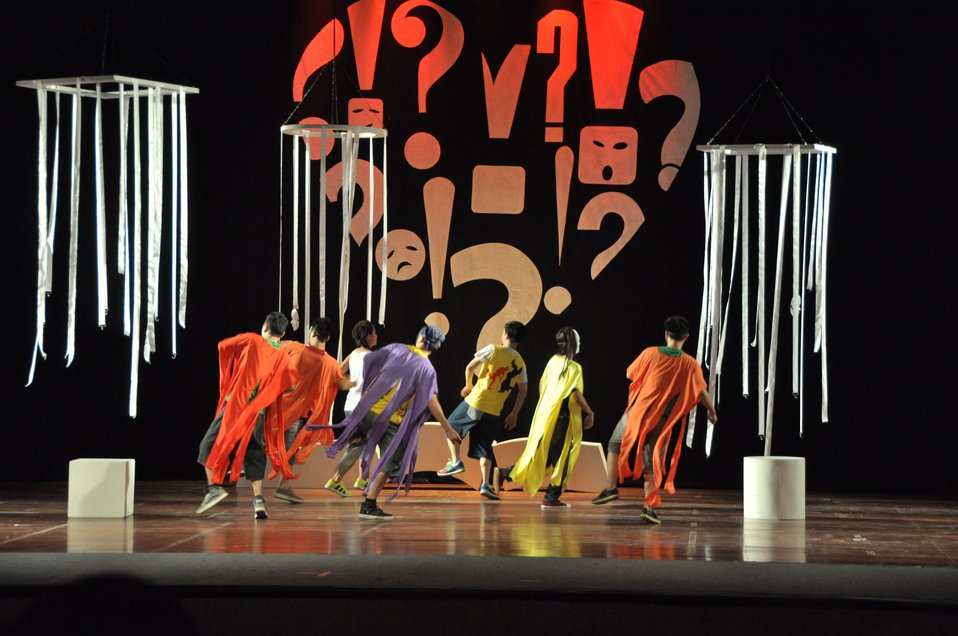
PEPFAR Musical Questions and Exclamations

Hanoi, May 17, 2013